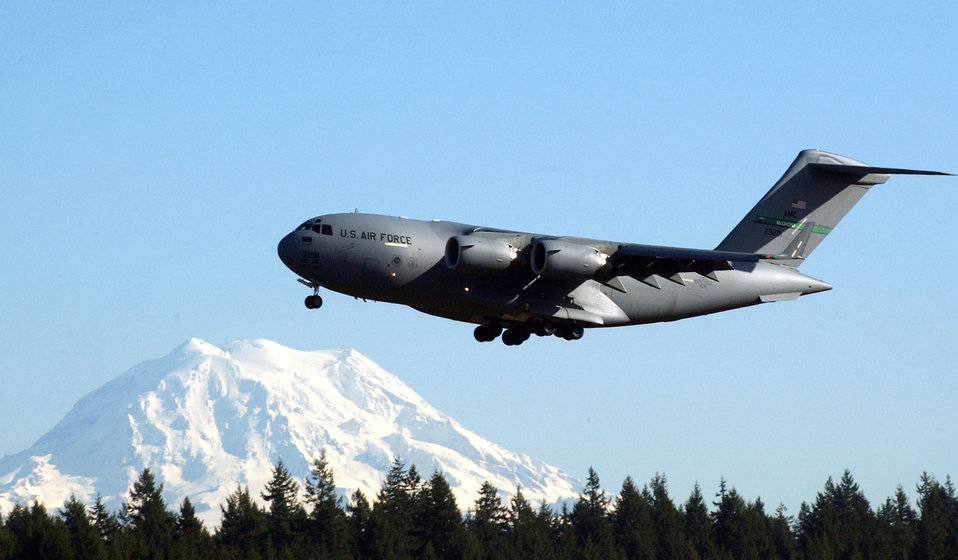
Snow capped Globemaster

OVER MCCHORD AIR BASE, Wash. -- A C-17 Globemaster III flies through the sky while participating in Operation Wildfire on Feb. 8. The operation simulates a mortar and chemical attack at a simulated deployed location. The exercise helps prepare McChord Airmen for counter chemical warfare conflict operations.